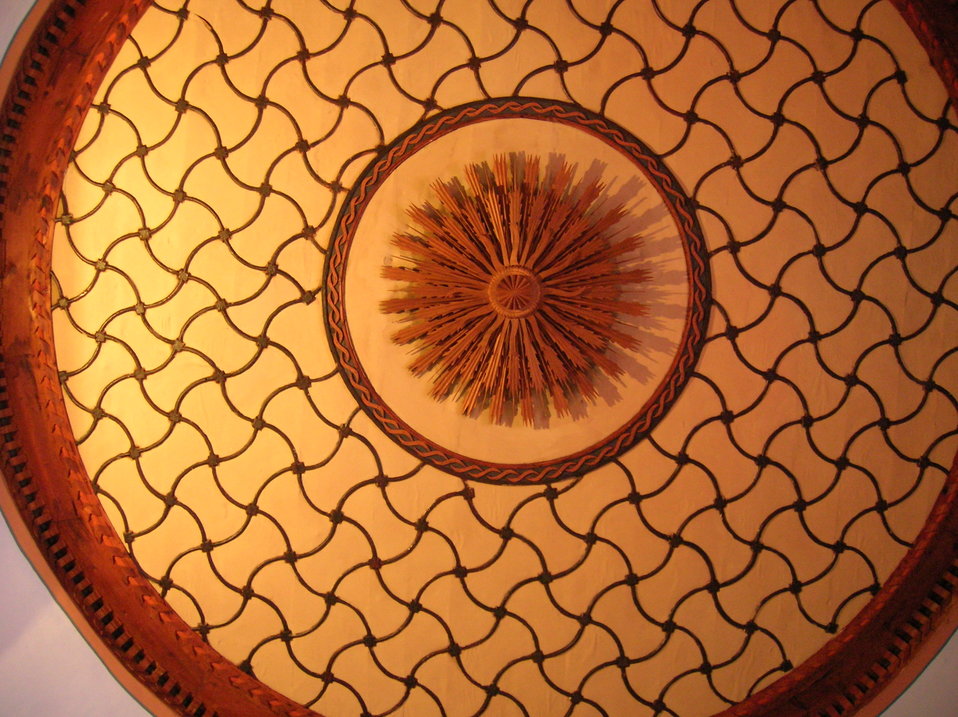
Wooden ceiling in Kableshkov House, in Koprivshtitsa (Bulgaria). Fran√ßais†: Plafond en bois dans la Maison Kableshkov, √† Koprivchtitsa (Bulgarie).